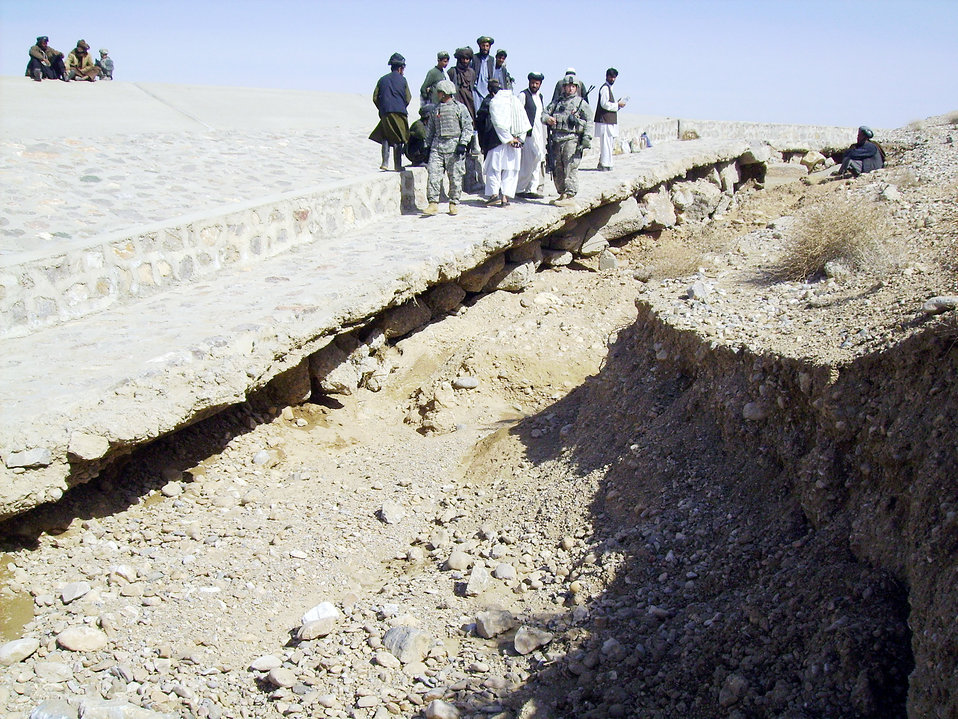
Security Forces stop base intruders

Members of Provincial Reconstruction Team Zabul confer with local Afghan leaders and contractors as they assess the deterioration of one of the roads Feb. 1, 2010, in Qalat. This road was repaired as one of the 40 commanders emergency response program projects. The partnership has enabled projects totaling more than $40 million throughout Zabul province.